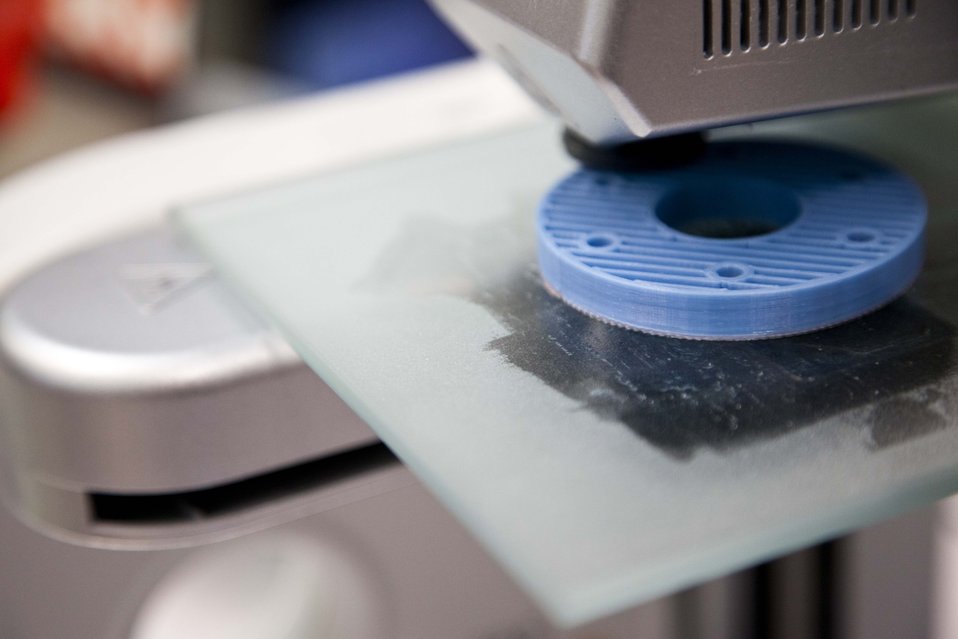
AEMC Summit

Additive manufacturing (or 3D printing) works by depositing materials only where they are specified in a digital design file, layer by layer. The printer shown here is an example of one of the more than 400 3D printers the Energy Department and its partners are making available to the high school teams participating in the FIRST Robotics Competition. Teams will use the 3D printers during a six-week build period as they work to construct the most efficient robot.